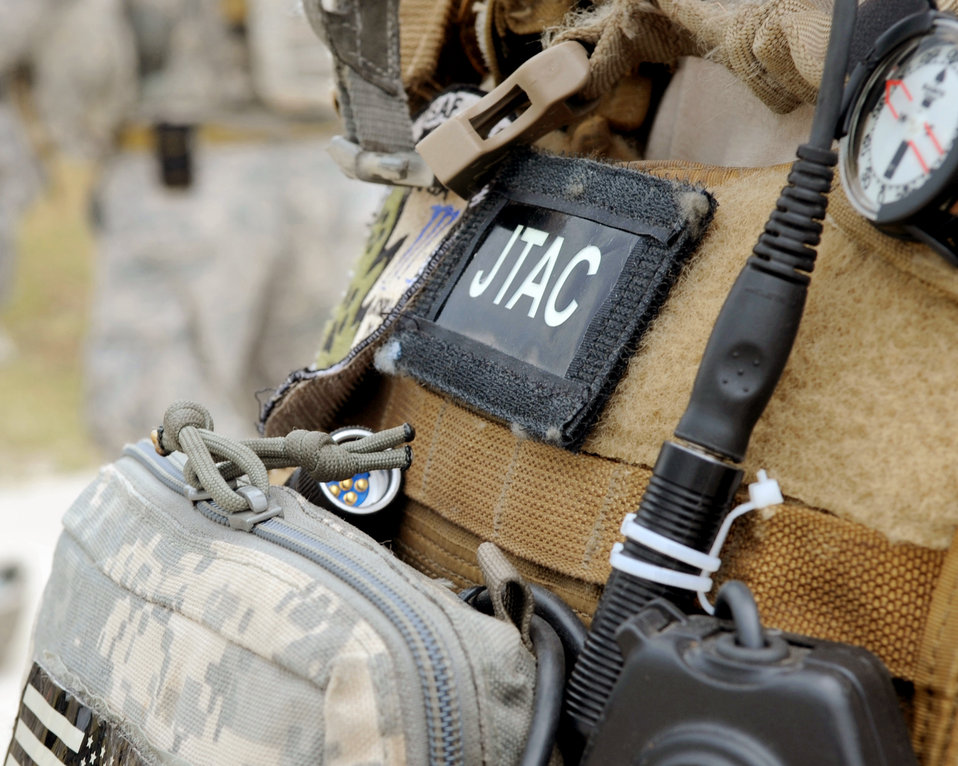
Exercise Allied Strike 10

Joint terminal attack controllers are ready to test their skills July 23, 2010, during Exercise Allied Strike 10 at the U.S. Army's training area in Grafenwoehr, Germany.